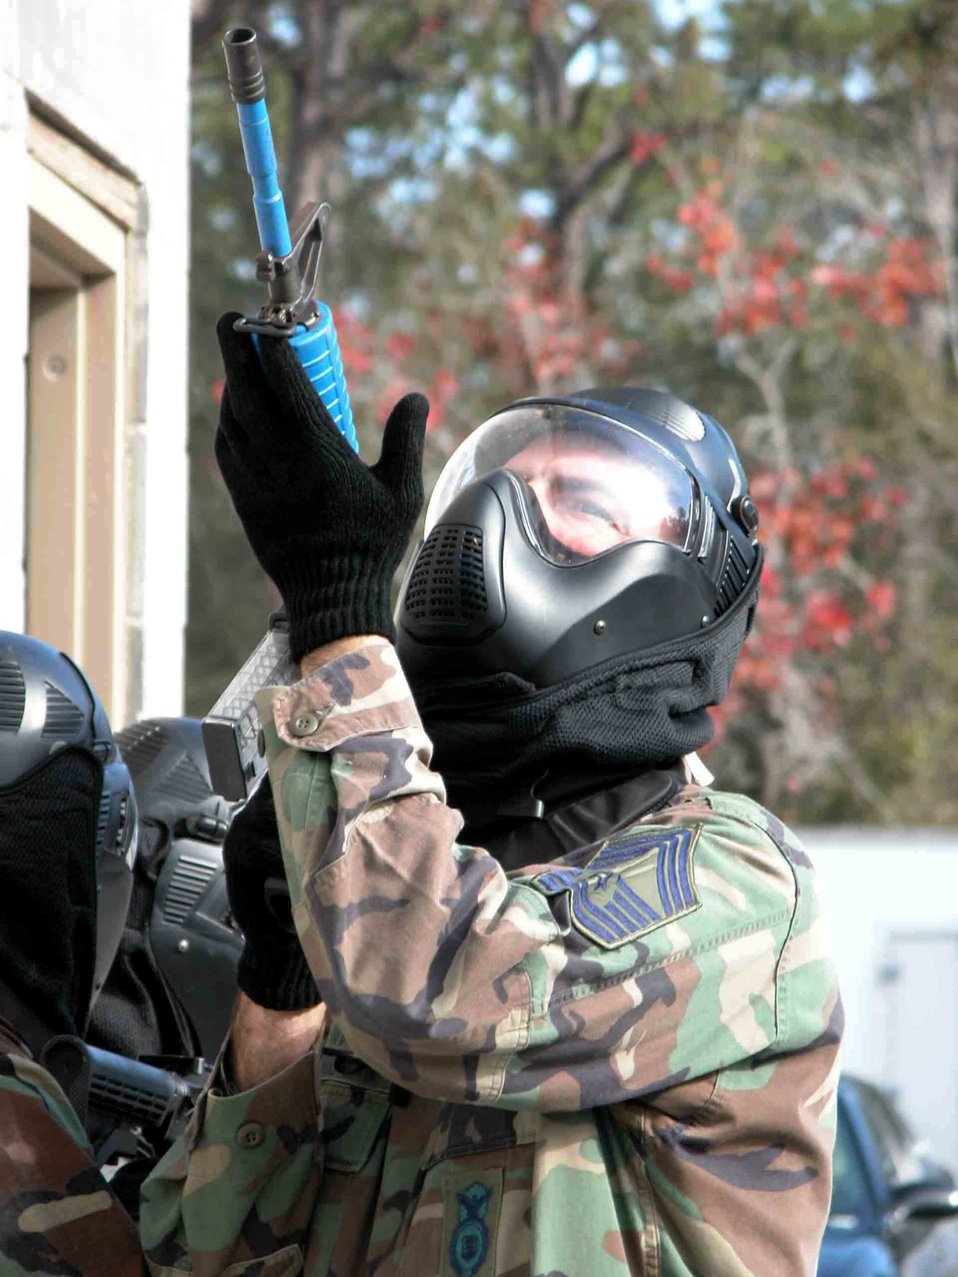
Preparing to deploy

EGLIN AIR FORCE BASE, Fla. -- Chief Master Sgt. Dan Langevin scans the tops of buildings while others prepare to search one during Brave Defender combat training here recently. Chief Langevin is from the 78th Security Forces Squadron at Robins Air Force Base, Ga.